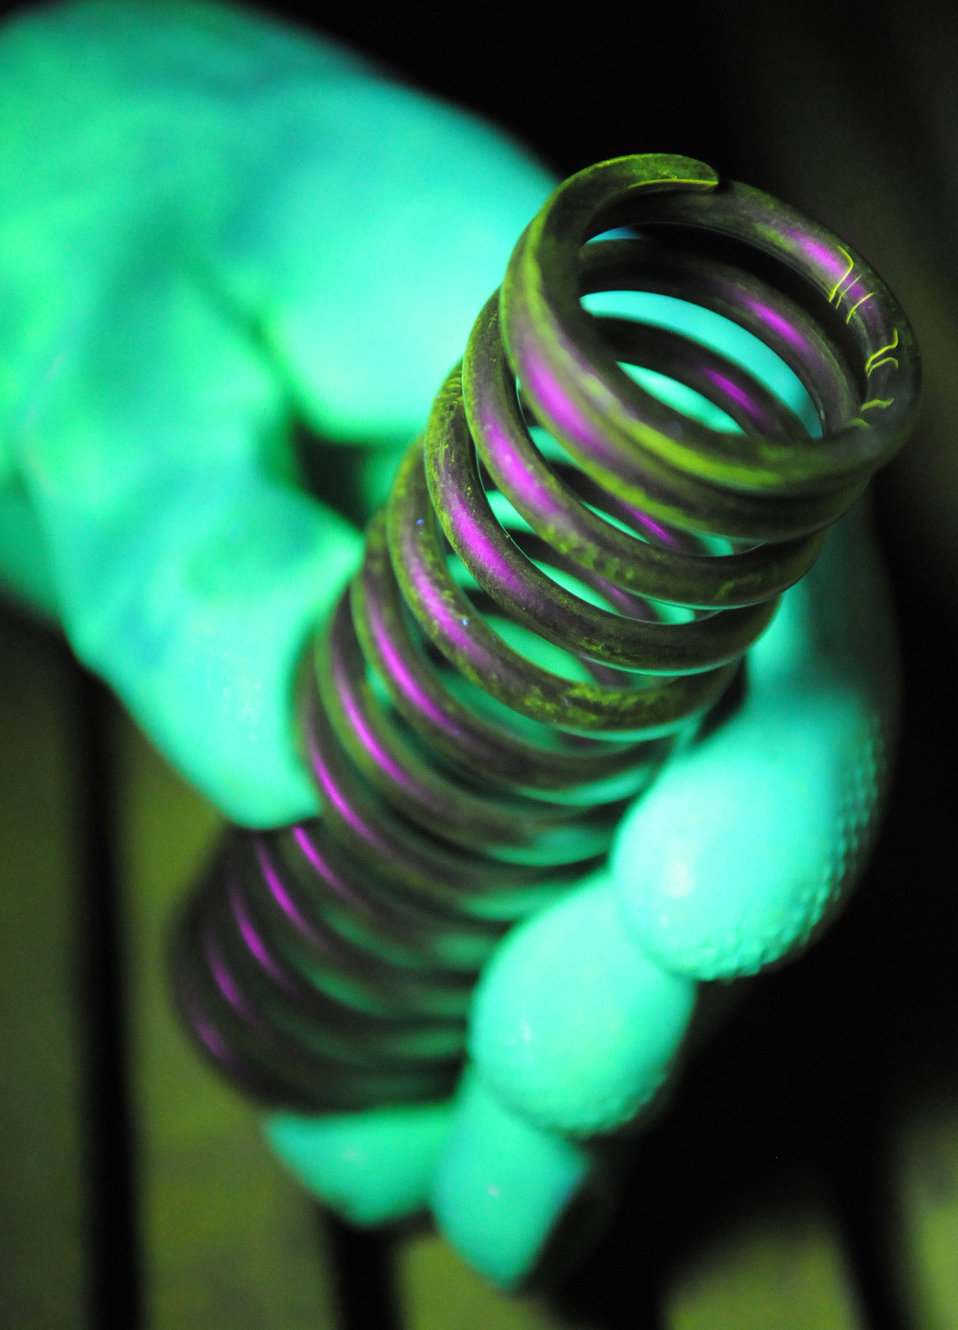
Black light inspection

Cracks glow on a spring under a black light after being run through a magnetic particle machine at the non-destructive inspection shop March 9, 2010, at RAF Mildenhall, England. NDI is crucial in identifying defective aircraft parts to prevent possible failure due to microscopic cracks and fractures on the surface or internally.